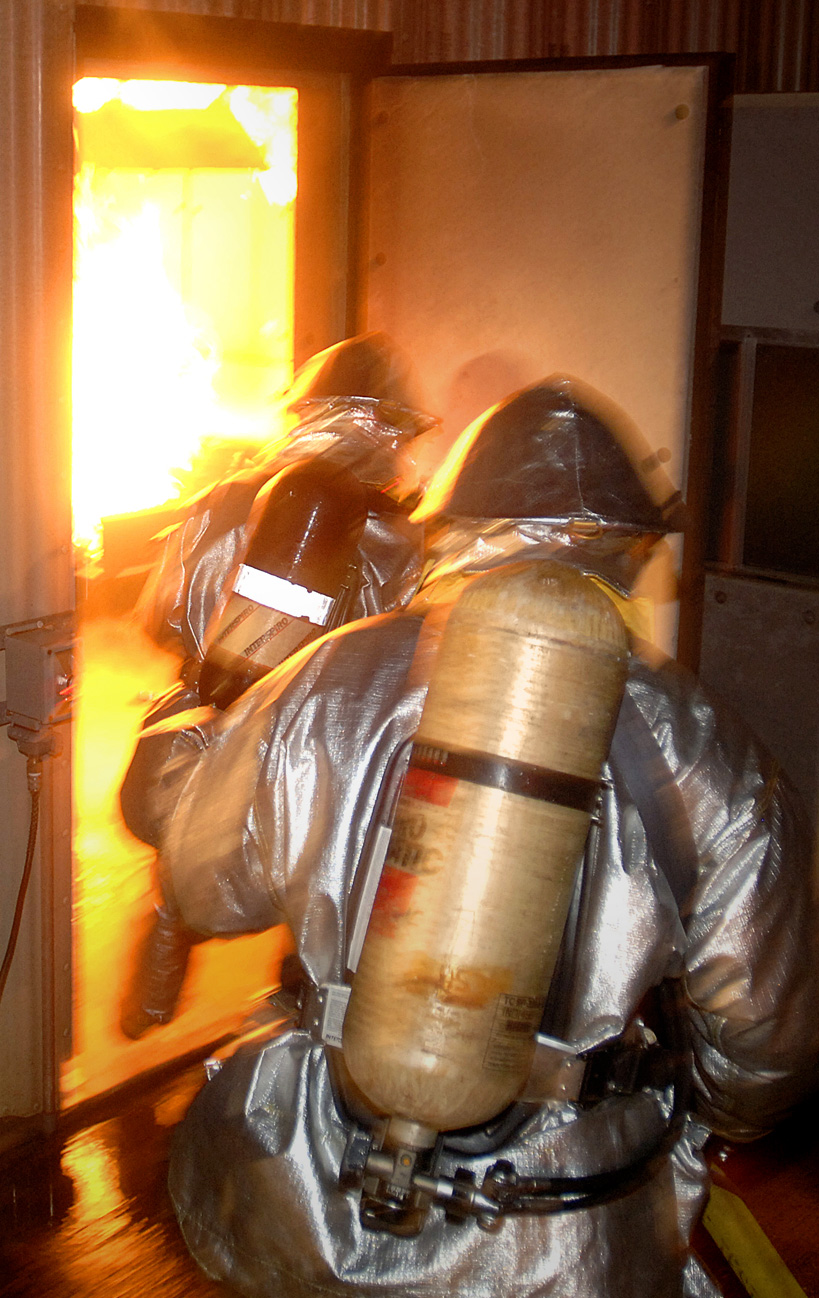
Extinguished

ANDERSEN AIR FORCE BASE, Guam -- Firefighters here work to put out a fire as part of a simulated house fire during exercise Beverly Palm 05-07. The routine exercise is held several times a year to sharpen the mobility and wartime capabilities of participating service members.